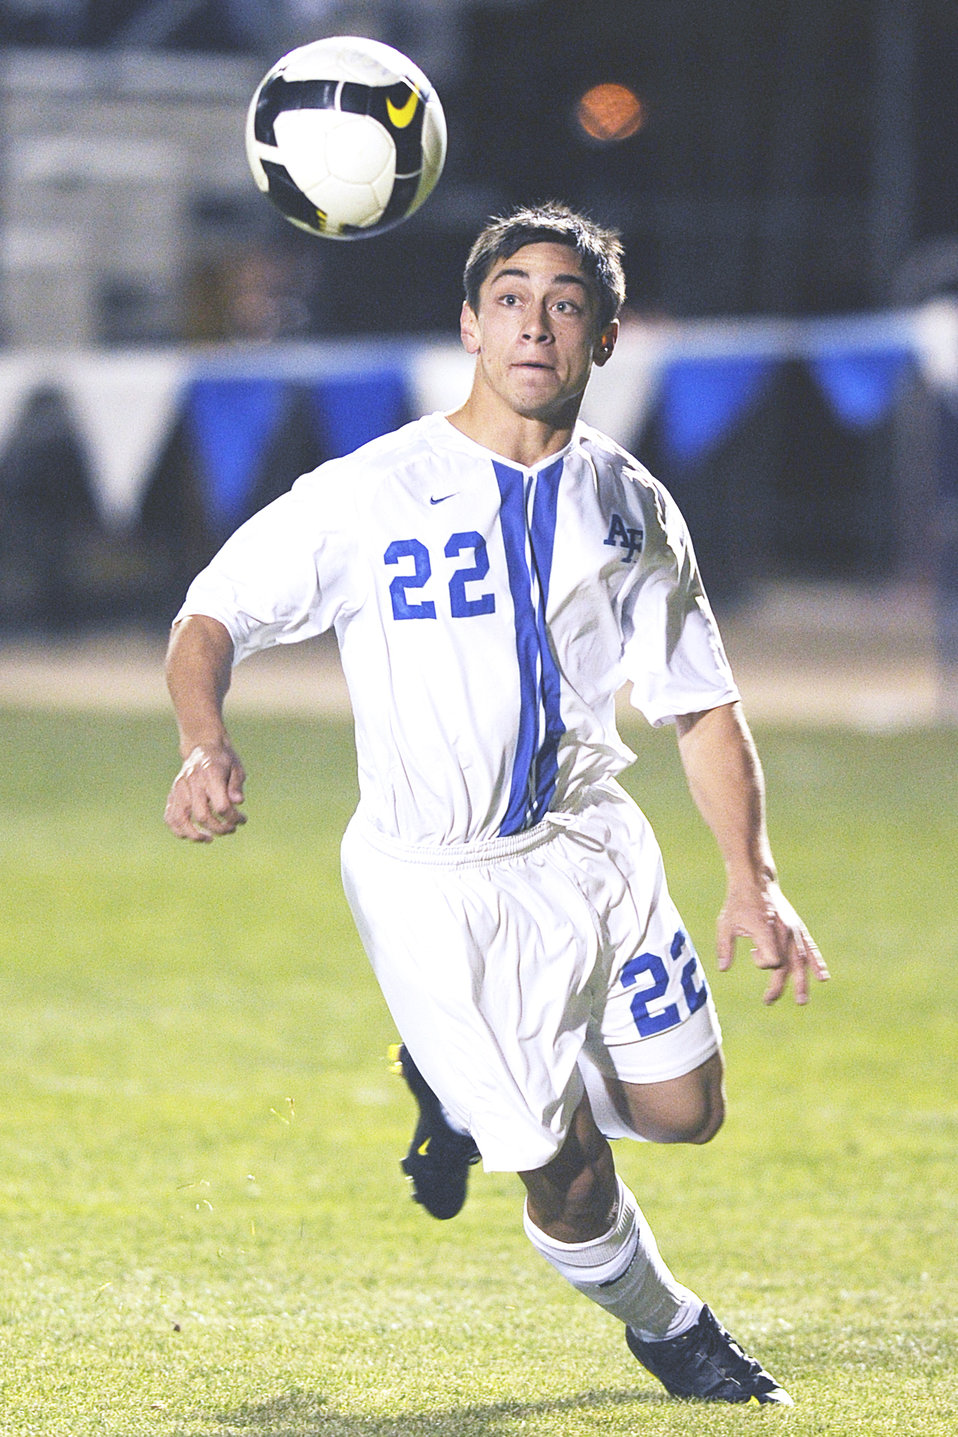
Air Force Academy

U.S. Air Force Academy, CO -- Sophomore mid-fielder Ben Chavez takes a pass during action against the University of Denver at the Cadet Soccer Stadium Nov 7. Denver defeated the Falcons 2-0 in the regular-season finale for both teams. The Falcons fell to 7-8-1, and 2-5 in league play. The two teams will meet again in five days in the first round of the MPSF tournament on Nov 12 at the University of Denver Stadium. Air Force finished the season with a 5-1-1 record at home, and honored its seven seniors in a pre-game ceremony celebrating the final home game of their career.